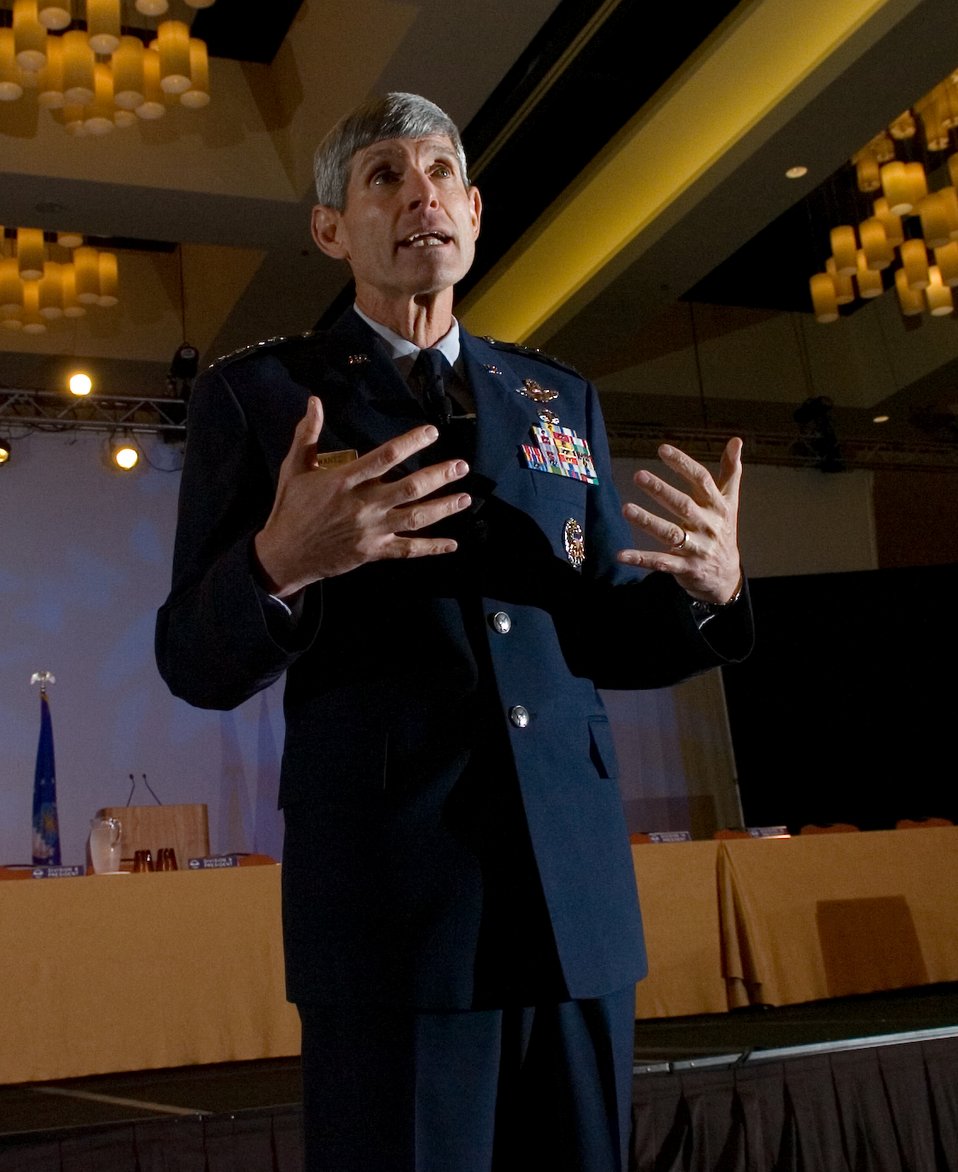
Air Force chief of staff discusses leadership goals

Gen. Norton Schwartz, Air Force chief of staff, delivers his keynote speech Aug. 25 during the Air Force Sergeants Association's annual Professional Airmen's Conference and International Convention in San Antonio. The general discussed the importance of noncommissioned officers and reiterated his faith in the Air Force to the packed ballroom of Air Force Sergeants Association members.